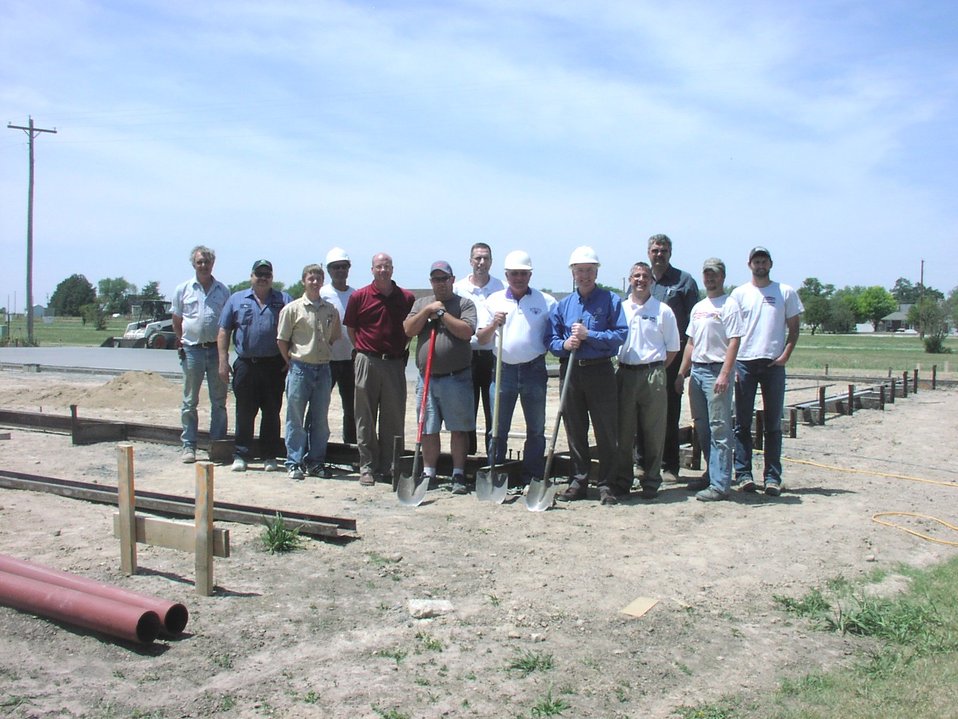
REDLG Quinter Fire Station

City employees, members of the volunteer fire department, U.S, Department of Agriculture Rural Development staff and representatives from Midwest Energy and Quinter Manufacturing and Construction celebrated the groundbreaking of the new fire station.